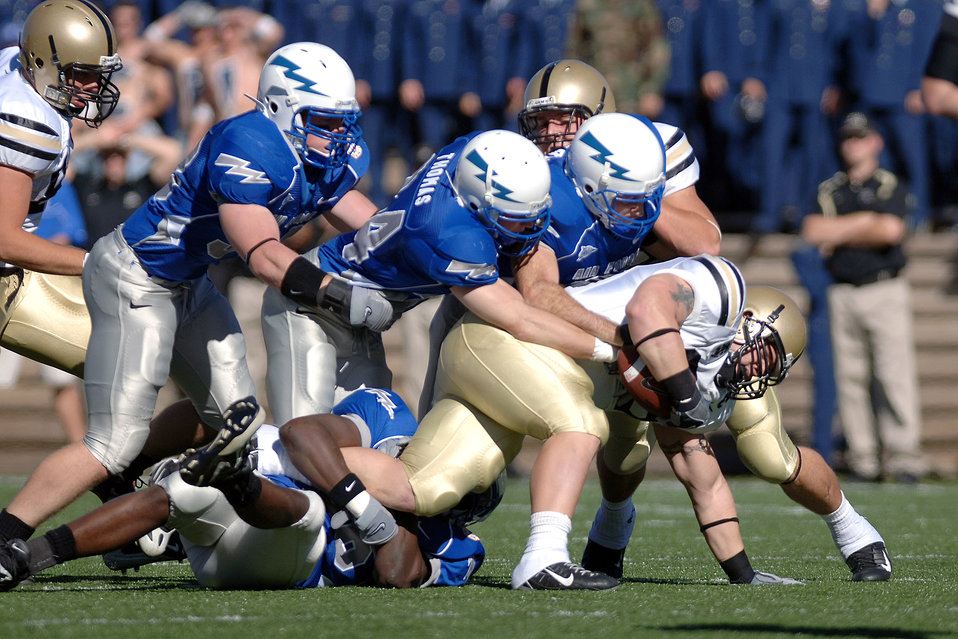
Football: Falcons ride record-breaker Hall over Army

Falcon strong safety Chris Thomas, 34, and friends wrap up Army fullback Mike Viti during Air Force's 30-10 win over the Black Knights Nov. 3 at Falcon Stadium in Colorado. The bluesuiters held the Army ground attack to a net 17 yards on 26 carries.